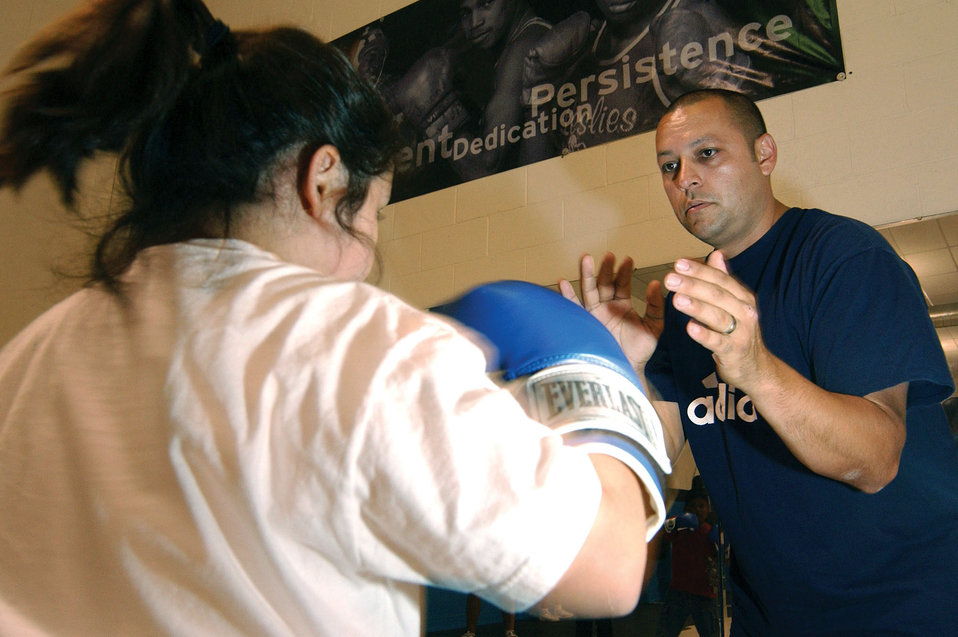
Volunteer coach shares passion for boxing

MCCHORD AIR FORCE BASE, Wash. -- Staff Sgt. Edward Rivas works with his 9-year-old-daughter, Mariah, on her boxing basics. He is a volunteer coach at the Boys and Girls Club boxing program in nearby Tacoma. Sergeant Rivas is a flying crew chief with the 62nd Aircraft Maintenance Squadron.